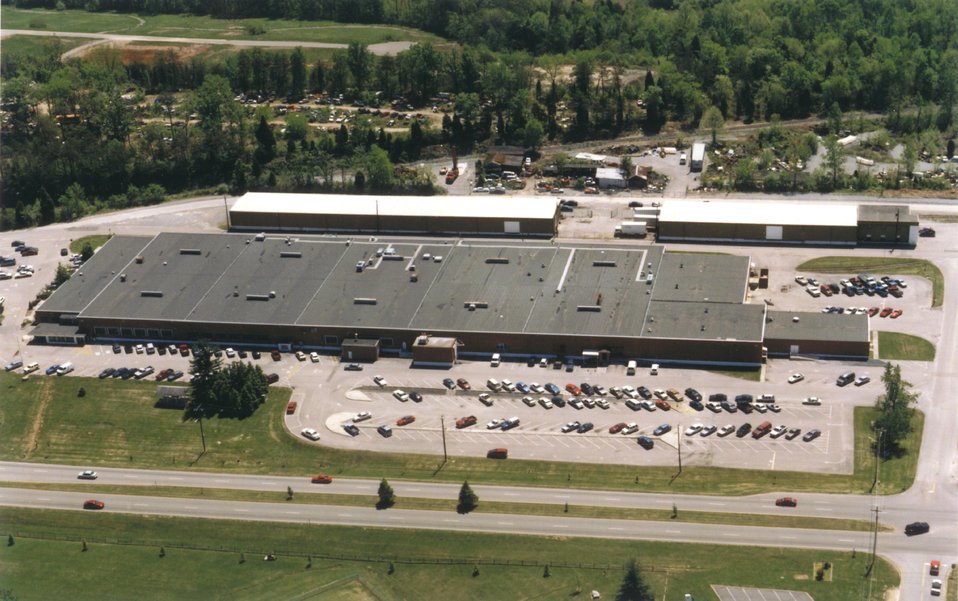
OFFICE OF SCIENCE AND TECHNICAL INFORMATION AT OAK RIDGE NATIONAL LABORATORY.